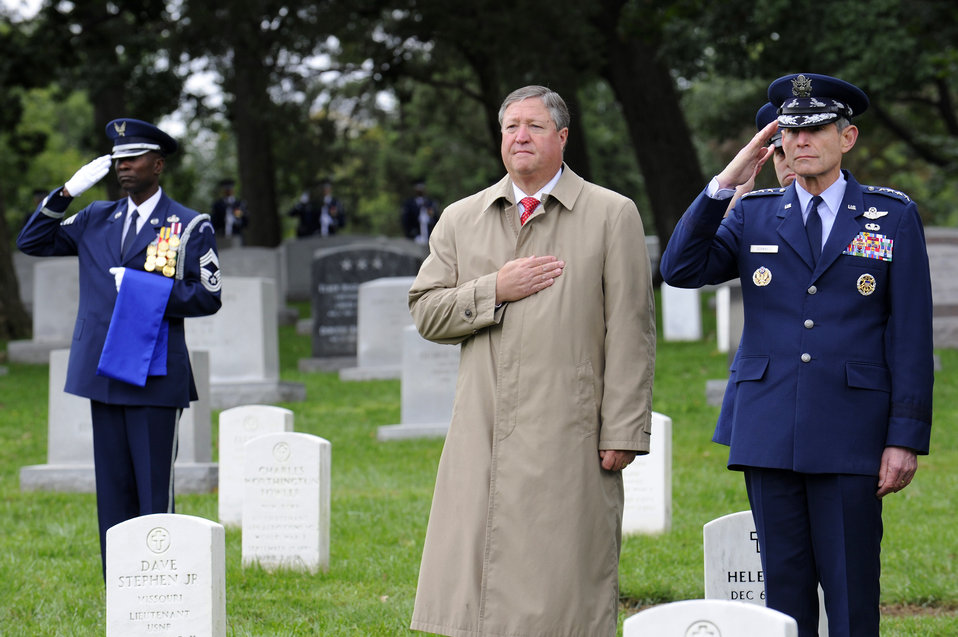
A final salute

Secretary of the Air Force Michael Donley and Air Force Chief of Staff Gen. Norton Schwartz pay their respects Oct. 3, 2011, at Arlington National Cemetery, Va., during the full-honors funeral of retired Maj. Gen. John Alison. Alison was a war hero and founding father of the Air Force, special operations forces, having served with the Flying Tigers‚ 75th Fighter Squadron and the 1st Air Commando Group during World War II.